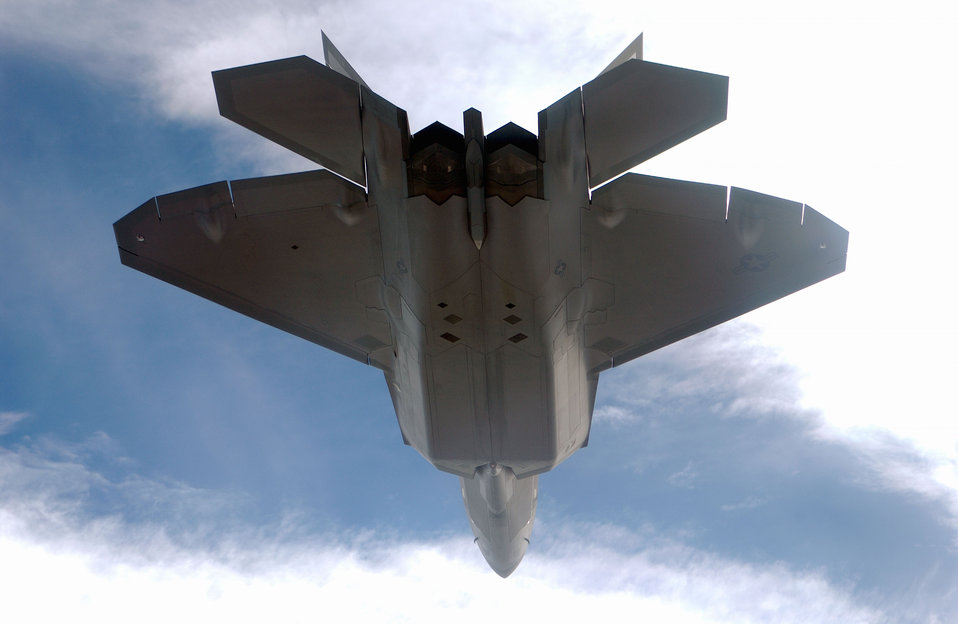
New Raptor arrives

TYNDALL AIR FORCE BASE, Fla. -- Raptor 01-018, flown by Lt. Col. Jeffrey Harrigian, 43rd Fighter Squadron commander, is the first of 48 new F/A-22 Raptors to be assigned to Tyndall AFB's 325th Fighter Wing. The F/A-22 combines stealth, supercruise, maneuverability and many other features enabling a first look, first shot, first kill capability that will provide continued air dominance for generations to come.